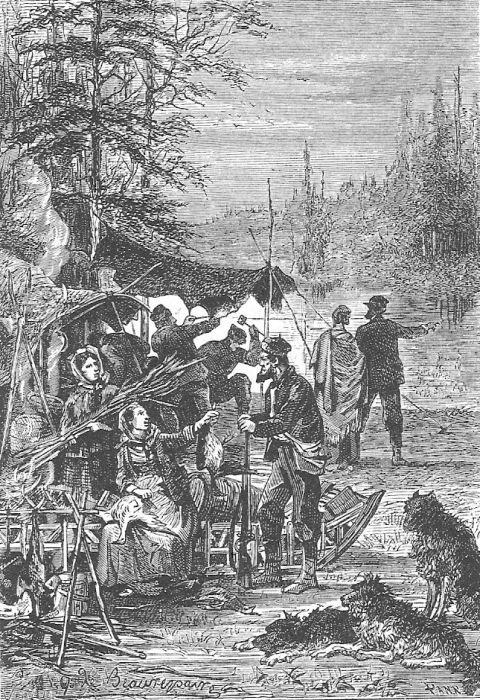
An illustration from Jules Verne's novel 'The Fur Country' (1871-72) drawn by Jules-Descartes Férat or Alfred Quesnay de Beaurepaire. Polski: Ilustracja powieści Juliusza Verne'a 'Wyspa błądząca' (także: 'W krainie białych niedźwiedzi', przekł. dosł.: 'Kraina futer'; 1871-72) autorstwa Julesa-Descartesa Férata lub Alfreda Quesnaya de Beaurepaire'a. Français : Jules Verne: 'Le Pays des fourrures' (1871-72), dessins par Jules-Descartes Férat ou Alfred Quesnay de Beaurepaire. Orginal description from the book: Français : Un campement provisoire…